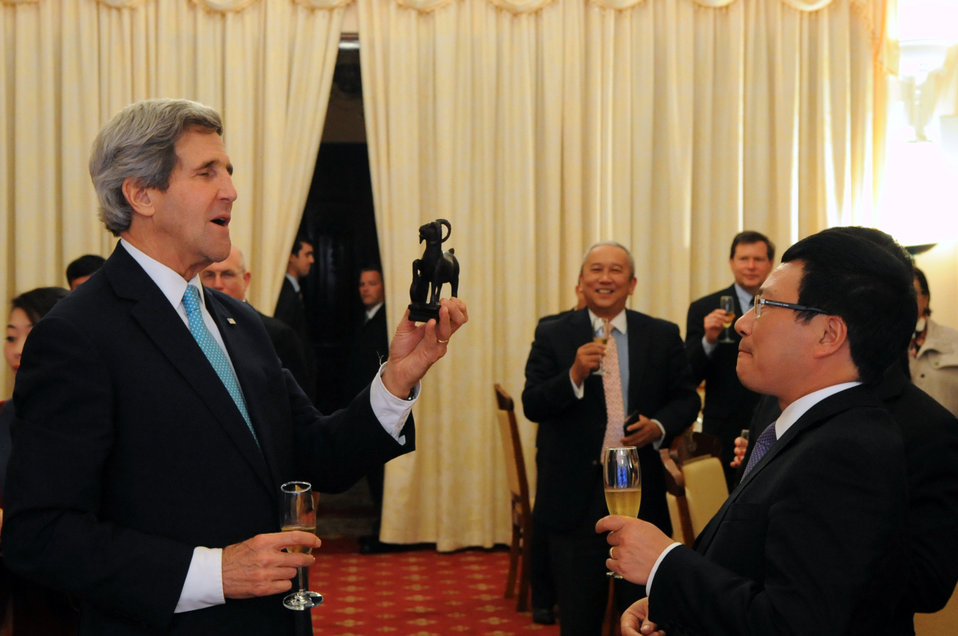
Secretary Kerry Receives a Goat Statuette to Commemorate the Year of his Birth

U.S. Secretary of State John Kerry admires a goat statuette given to him by Vietnamese Foreign Minister Pham Binh Minh in Hanoi, Vietnam, on December 16, 2013, to commemorate the year of the Secretary's birth, 1943. The Secretary turned 70 on December 11, 2013.